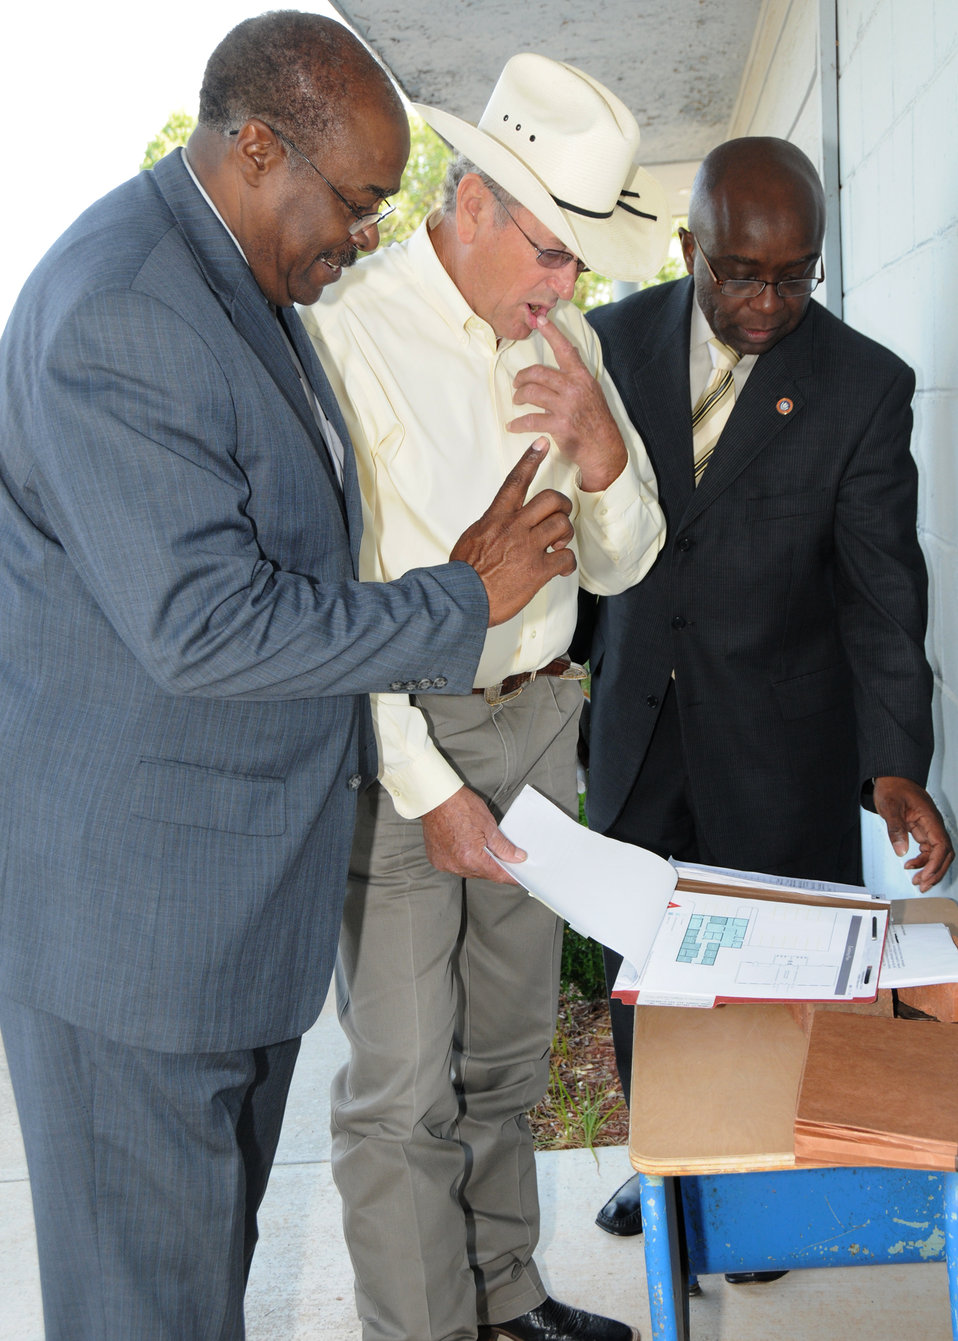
(L to R) Mayor of Langston, Oklahoma, Blayne Hinds; Rural Development Area Director, Tom Barber; and USDA Laison, Dwight Guy, look over the blueprints and discuss the expansion plans for the health center. The clinic received a CF grant of $100,000.00 and a CF l Direct Loan of $563,863.00 from Rural Development from ARRA funding. The new expansion will connect the two buildings and add additional examing rooms and a dental facility.